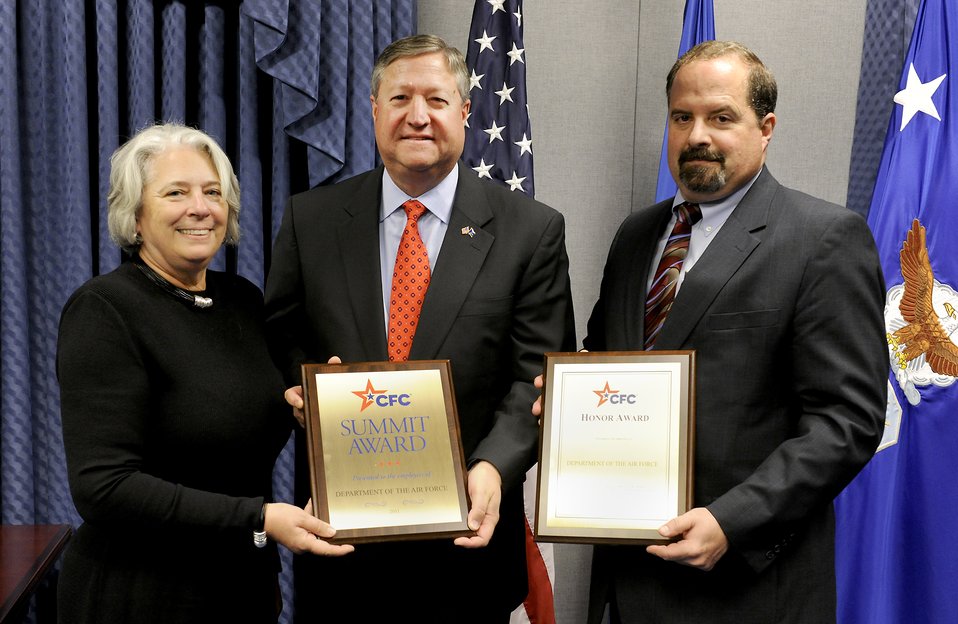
Air Force raises $2.3 million for CFC, takes top honors

Secretary of the Air Force Michael Donley and Timothy Beyland accept the Combined Federal Campaign Summit and Honor awards from Ren√©e S. Acosta May 2, 2012, during a Pentagon ceremony. Beyland is an the administrative assistant to the secretary of the Air Force, and Acosta is the president of the Global Reach Foundation.